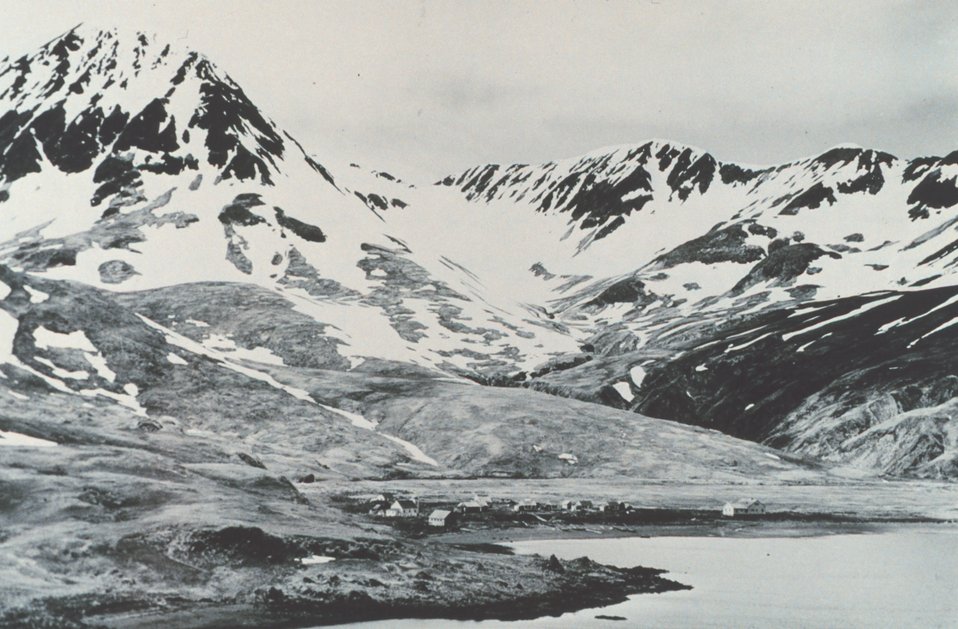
Village of Attu. Attu was one of two Aleutian islands captured by Japanese forces during WW II. A Weather Bureau observer, Charles Foster Jones, was shot and killed by the Japanese; his wife and 42 Aleut Americans were taken prisoners of war and taken to labor camps in Japan. 40% of the Aleuts died including Attuan Chief Mike Hodiakoff who had warned U.S. military of coming invasion.